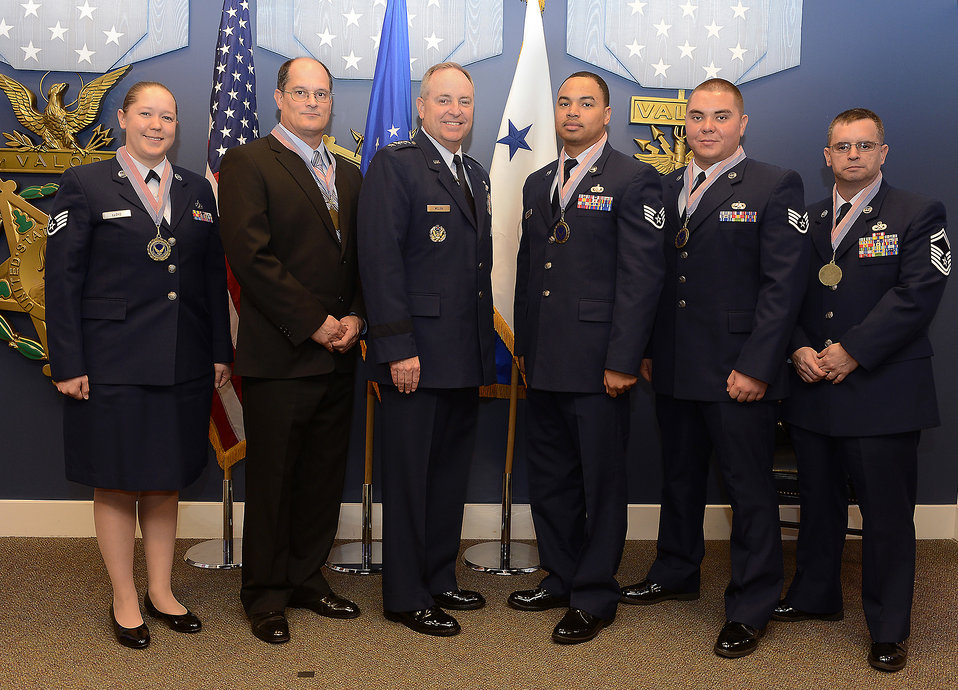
CSAF Team of Excellence awards

Members of the second runner-up of the 2012 Chief of Staff Team Excellence Award, the B-2 window Change Continuous Process Improvement Team from Whiteman Air Force Base, Mo., are congratulated by Air Force Chief of Staff Gen. Mark A. Welsh III in a Pentagon ceremony on Nov. 27, 2012.